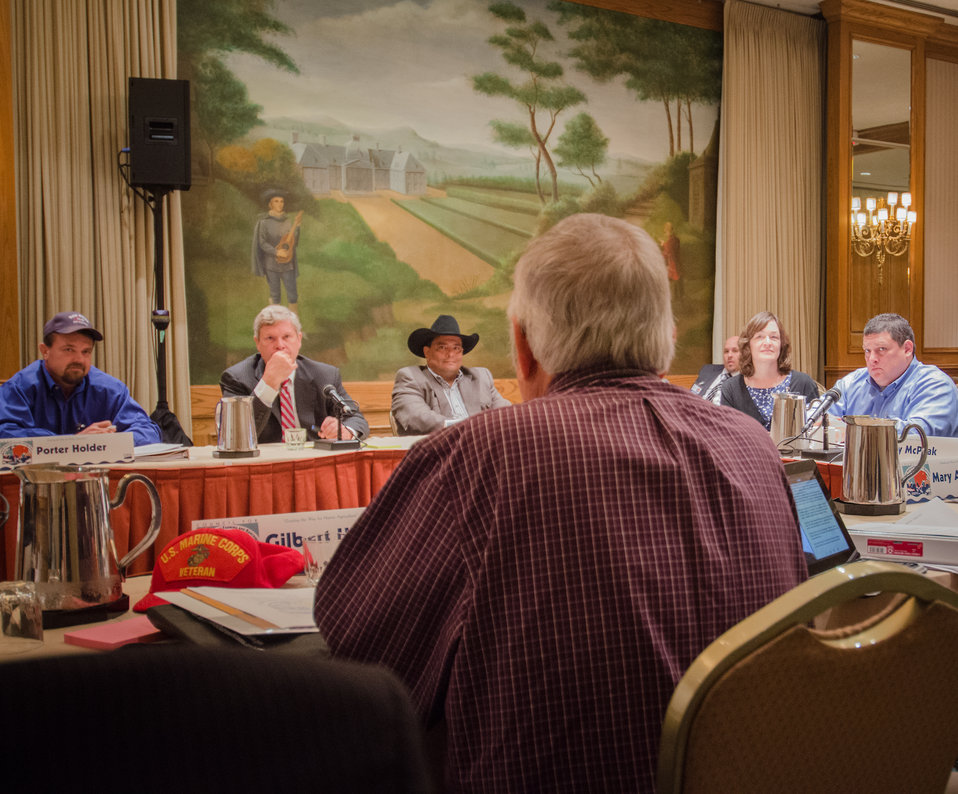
Agriculture Secretary Tom Vilsack, second from left, takes a questions from Rancher of the Navaho Nation in Shiprock, NM Gilbert Harrison, in foreground, during the U.S. Department of Agriculture's (USDA) Council for Native American Farming and Ranching (CNAFR) meeting, on Monday, Sep. 9, 2013 at the L'Enfant Plaza Hotel, in Washington, D.C. CNAFR was created to advise the Secretary on ways to eliminate barriers to participation for Native American Farmers and Ranchers in USDA programs. The Council was established as part of the Keepseagle settlement, and is conducted under the oversight of USDA's Office of Tribal Relations, which is part of the Office of the Secretary of Agriculture. Also in attendance is The Director of Tribal Relations Leslie Wheelock, Agriculture Assistant Secretary for Civil Rights Joe Leonard, Jr. Ph.D., Farm Services Administration Administrator Juan M. Garcia and Deputy Administrator for Farm Loans Programs Chris Beyerhelm.